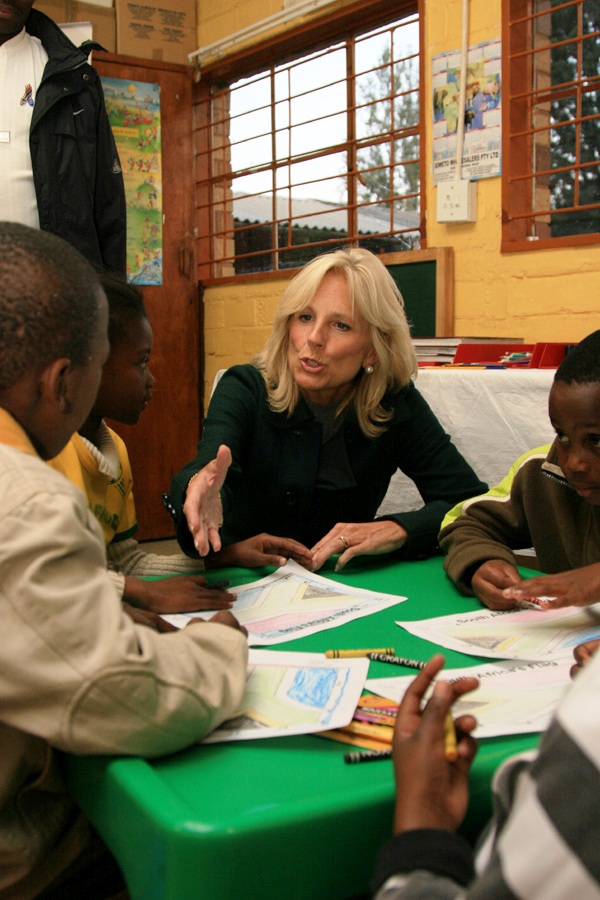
Dr. Jill Biden Interacts With Children

Dr. Jill Biden, wife of Vice President Joseph Biden, interacts with children during her visit to Mapetla Day Care Centre in Soweto, Johannesburg, South Africa, on June 10, 2010.